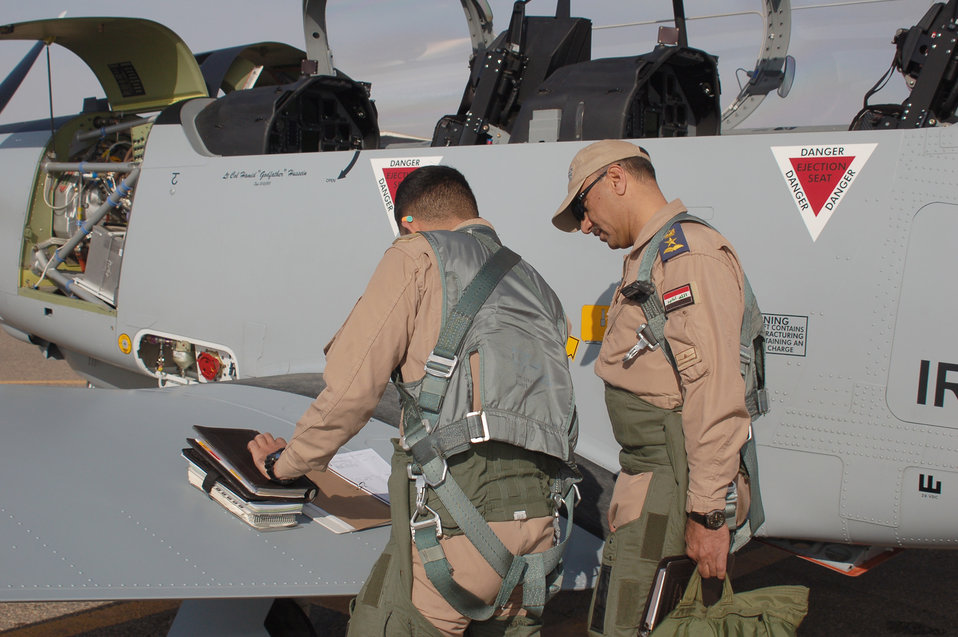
Iraqi air force Lt. Col. Hamid

Iraqi air force Lt. Col. Hussein Hamid (right), the first Iraqi air force instructor pilot to be certified in the post-Saddam era, reviews aircraft forms with a student pilot prior to his first instructor flight March 19, 2011, in Tikrit, Iraqi. Colonel Hamid's status as an instructor pilot is a major milestone for the Iraqi air force in developing as a credible, self-sustaining air power in the region. Colonel Hamid is the Iraqi air force Squadron 203 commander.